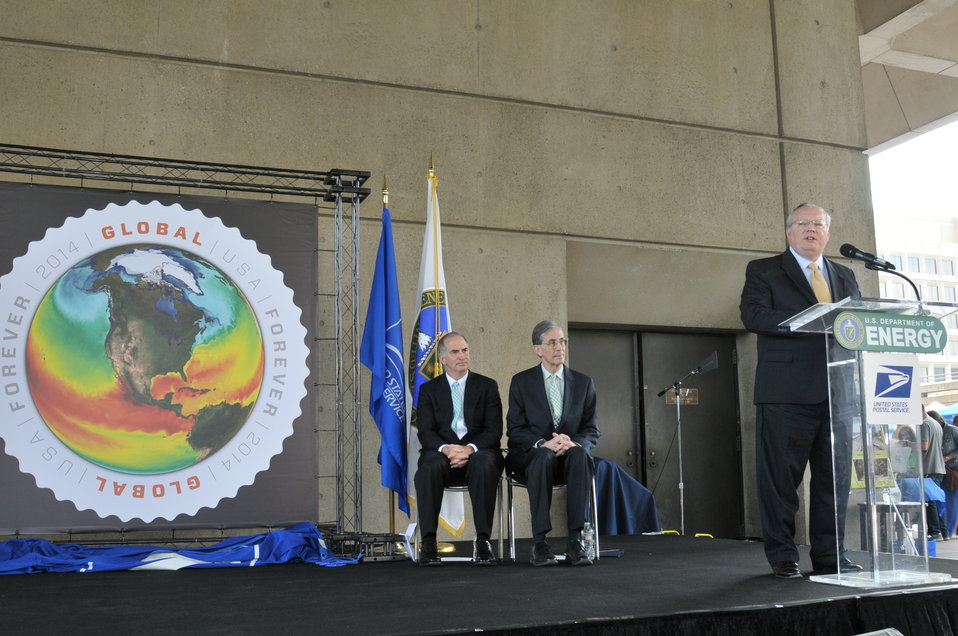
U.S Postal Services introduces a new Global: Sea Surface temperatures forever stamp at the Earth Day program at Department of Energy on April 22, 2014. ( DOE Deputy D.Poneman,T.Day, C.Williams, C.Anderson II, J.Colin Ph.D, Dr. K. Sullivan, K.Tobin Ph.D, W. Gicher Jr)